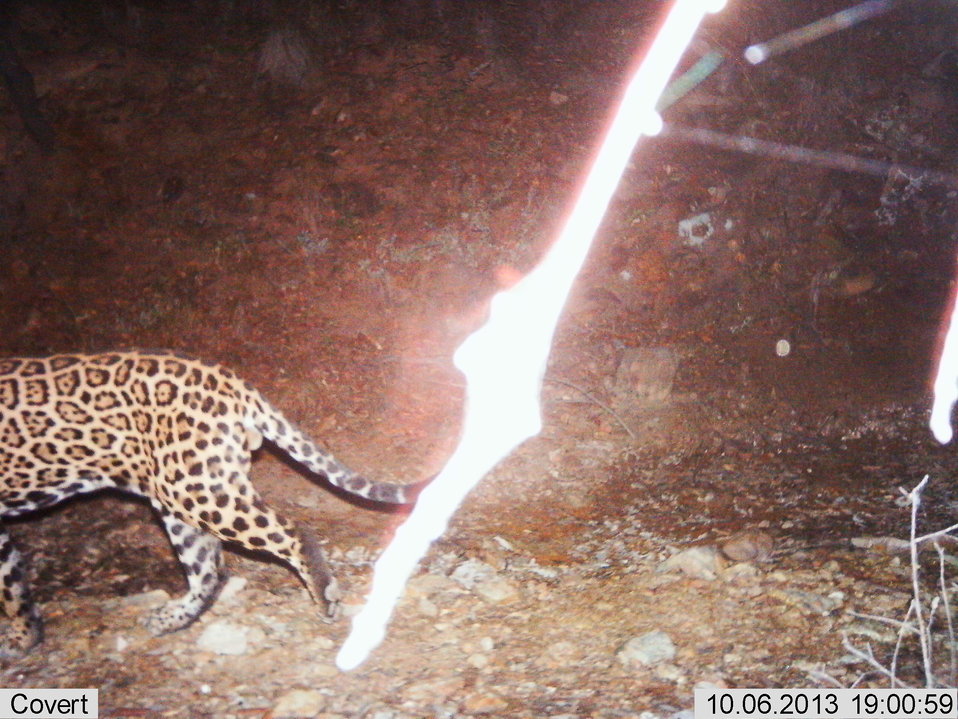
Male jaguar photographed by automatic U.S. Fish and Wildlife Service/Department of Homeland Security-funded jaguar survey conducted by University of Arizona. The jaguar has been photographed previously at this location.